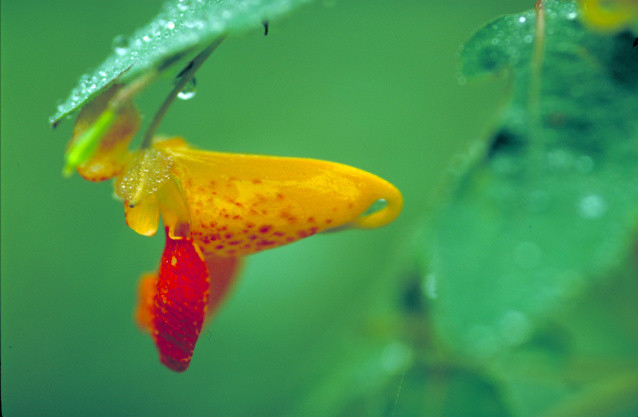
spotted jewelweed